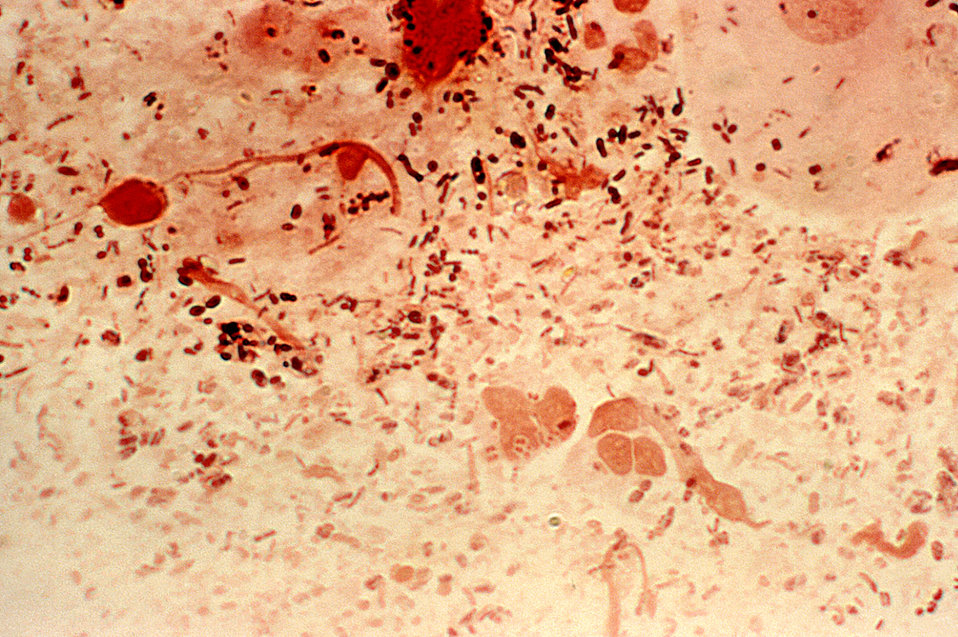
This Gram-stained micrograph of a rectal smear specimen reveals the presence of diplococcal N. gonorrhoeae bacteria.